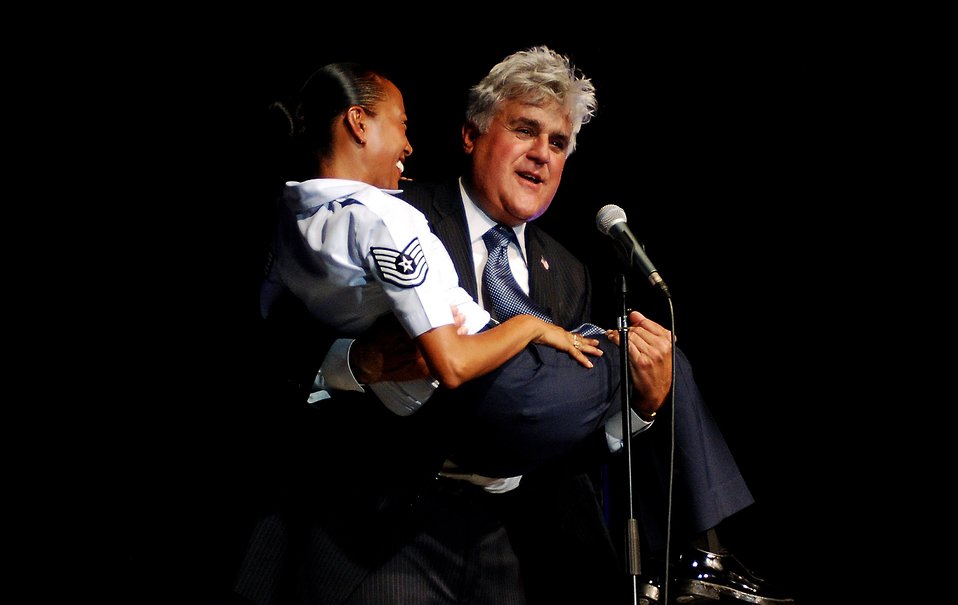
Tonight's Show

Jay Leno entertains members of the 433rd Airlift Wing, wounded warriors and their families Aug. 6, 2011 at Lackland Air Force Base, Texas. High Flight, an Air Force Reserve band, entertained the audience before Leno took the stage. The performance was part of the Refer a Friend Tour, which was to thank the Airmen who participated and educate other about the benefits of the Get 1 Program.